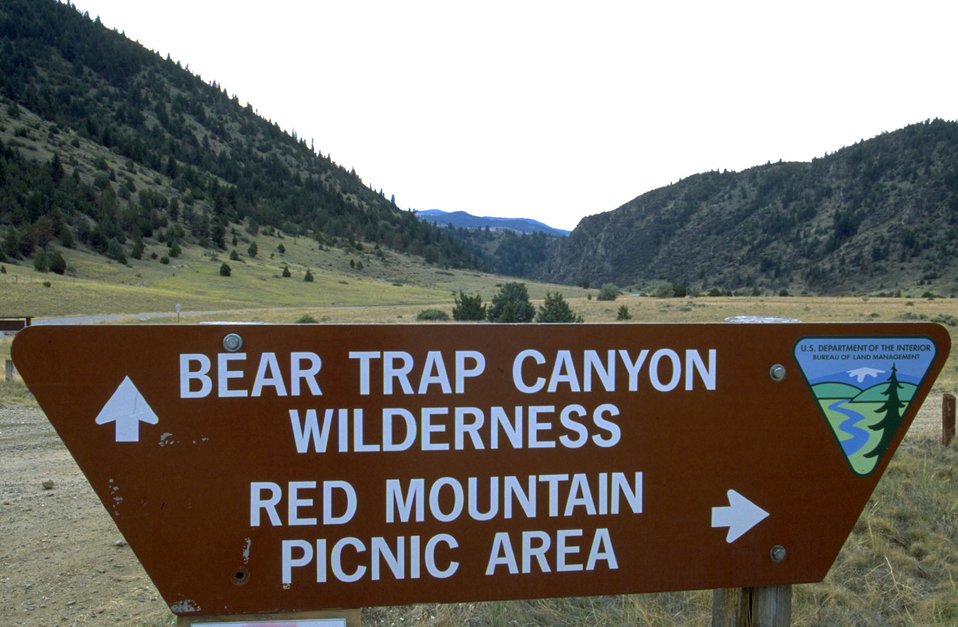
Information Sign at Red Mountain Campgound